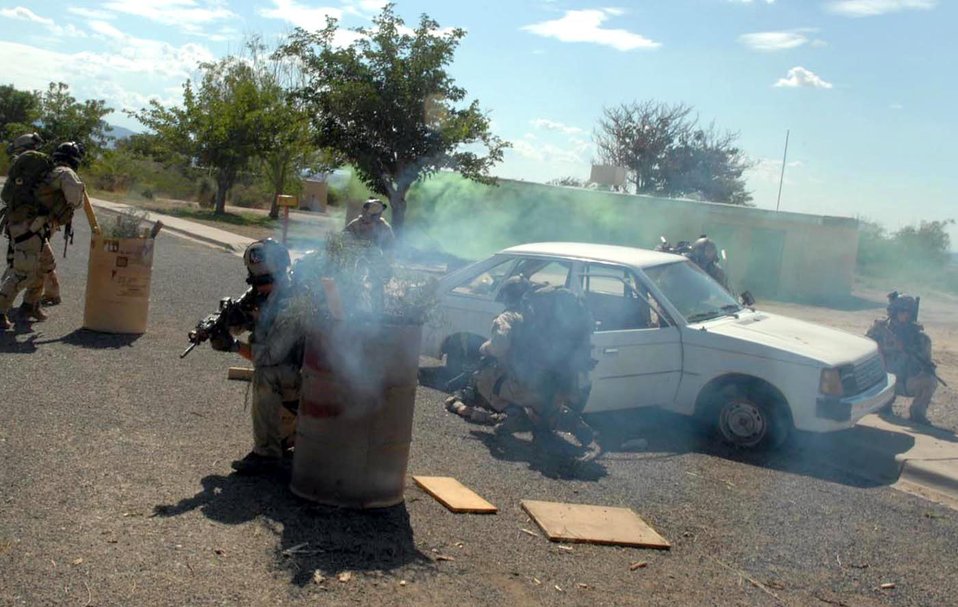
Angel Thunder

Pararescuemen from the 58th Rescue Squadron at Nellis Air Force Base, Nev., secure an accident scene during military operations urban terrain training July 13 in Playas, N.M., as part of Exercise Angel Thunder. Angel Thunder is a joint service combat search and rescue exercise designed to provide realistic training that tests theater spin-up capabilities and examines the integration of all Air Force assets in mission planning procedures and mission execution.